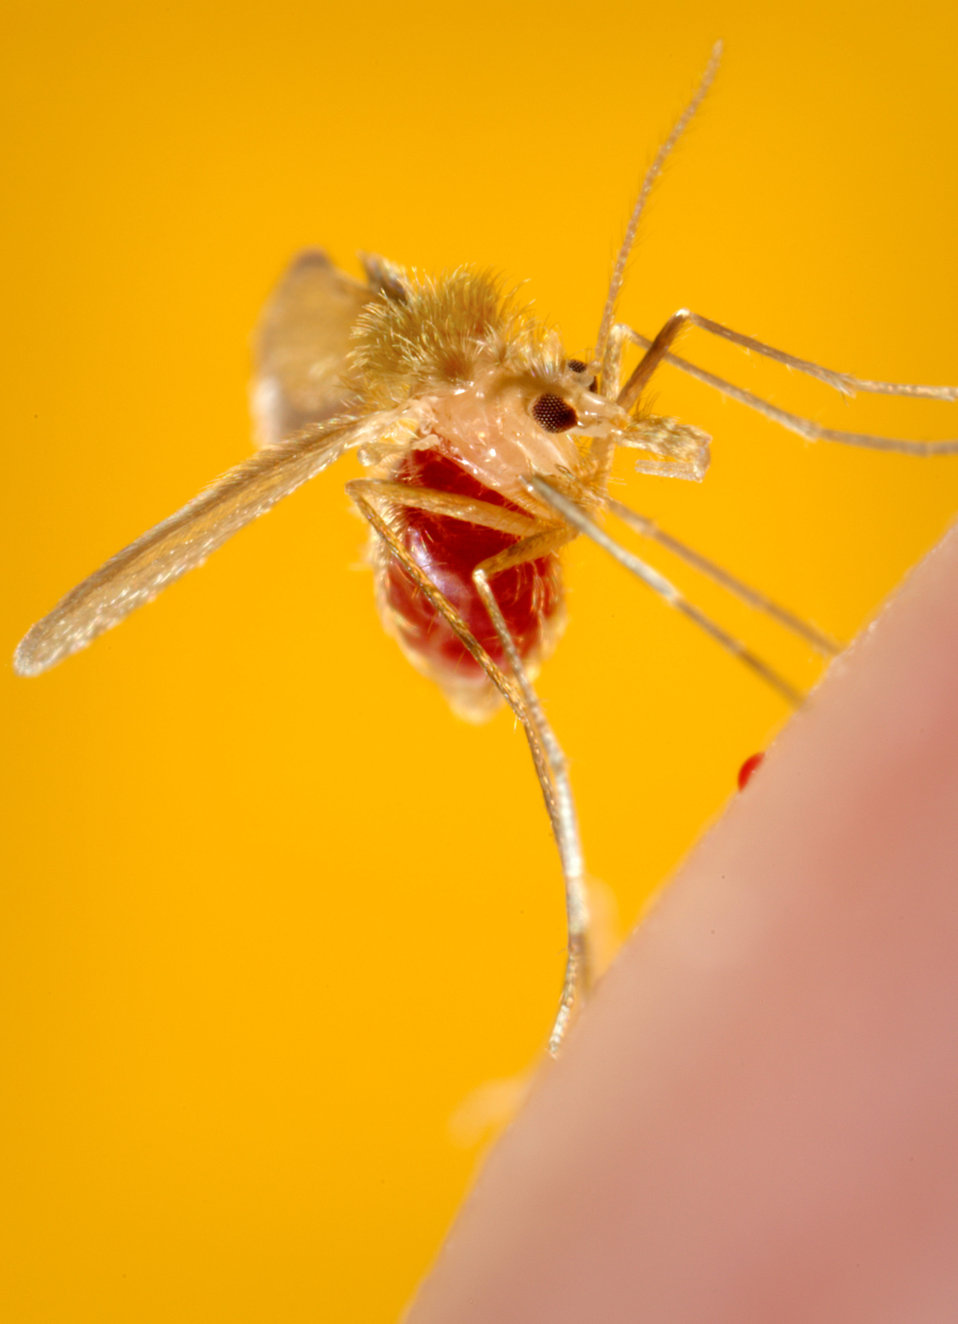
This photograph depicts a Phlebotomus papatasi sand fly, which had landed atop the skin surface of the photographer, who'd volunteered himself as host for this specimen's blood meal. The sand flies are members of the Dipteran family, Psychodidae, and the subfamily Phlebotominae. This specimen had just completed its ingestion of its bloodmeal, which is visible through its distended transparent abdomen. Sand flies such as this P. papatasi, are responsible for the spread of the vector-borne parasitic disease Leishmaniasis, which is caused by the obligate intracellular protozoa of the genus Leishmania.